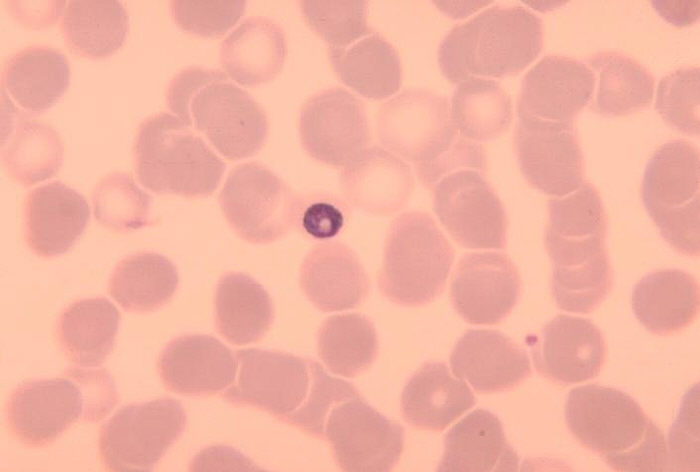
Blood smear showing compact old trophozoite of Plasmodium malariae.